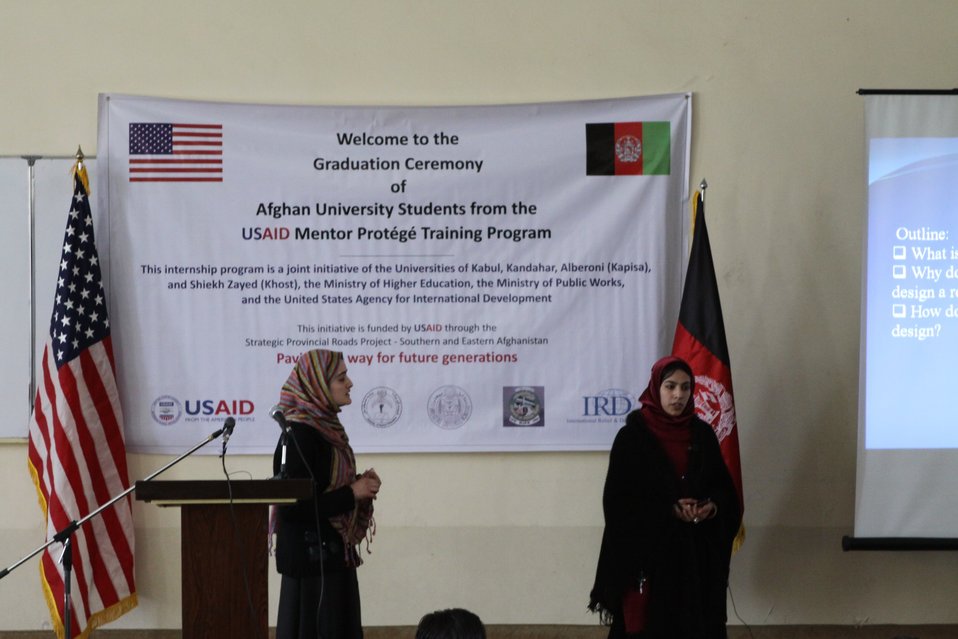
Female University Students Complete Internship

Kabul, Afghanistan | March 16, 2011 – In response to a demand for qualified Afghan engineers, Kabul University celebrated completion of an intensive five-month Mentor Protégé Training Program today by 10 female fourth year university students. The Training Program is a joint effort between the Government of the Islamic Republic of Afghanistan, the U.S. Agency for International Development (USAID), and the Universities of Kabul, Kandahar, Alberoony in Kapisa, Shiekh Zayed in Khost. The graduation ceremony highlighted collaboration with these national institutions in building the technical skills of young Afghans, made possible by USAID.

Four of the interns are engineers, while the remaining six are from the faculties of computer science, economics, and psychology.

Speaking about the event, H.E. Minister of Public Works Abdul Qudus Hamidi said, “The future of Afghanistan lies in developing the skills of our youth, and the engineering skills of these graduates today represent a small but important step forward for the country.”

Keynote speakers at the ceremony included H.E. Deputy Minister of Higher Education Abdul Rahim; USAID Senior Deputy Mission Director Robert Hellyer; and Chancellor of Kabul University Professor Hamidullah Amin. Approximately 150 people, including current and former students attended the graduation.

Launched last year, the Mentor Protégé Training Program has provided qualifying students the opportunity to intern with USAID’s Strategic Provincial Roads-South and East Afghanistan project and gain practical experience in a real work environment. The goal of the program was to offer interns the opportunity to gain hands-on experience to reinforce their formal studies. A total of 30 students from four national universities have benefitted from this program.

“The promotion of women’s rights is integrated into the overall U.S. Government development strategy and can be found in key programs, including education, healthcare, security, rule of law, political participation, agriculture, and economic development,” said Robert Hellyer. “The U.S. Government is committed to the Afghan leadership of programs that directly enhance development, particularly as it relates to women’s issues.”

This event also highlighted the learning achievements of students and emphasized the importance of hands-on internship programs. The curriculum is designed to instill students with the knowledge and confidence to qualify for engineering positions upon completion of their fourth year at their respective universities.